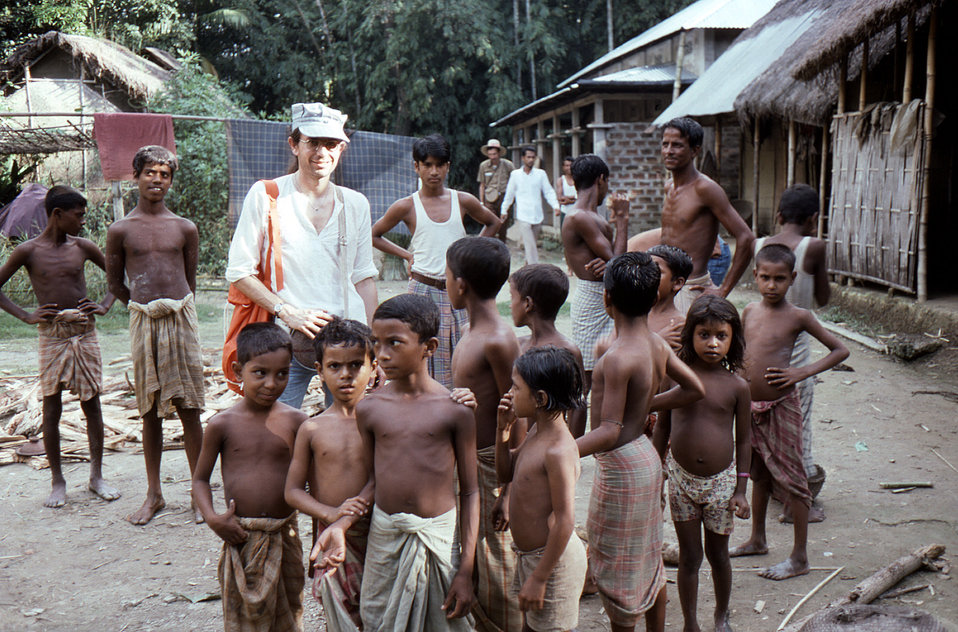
Photographed in the Sylet District of north-eastern Bangladesh, wearing a cap, was Dr. Michael Schwartz, as he was in the process of conducting a national house-to-house search for smallpox. Anyone with a fever and/or rash, was carefully evaluated. In 1975, these searches occurred every six weeks. Another purpose for these searches was to make sure Bangladeshi villagers knew where to report any suspected smallpox cases, as was depicted in PHIL 12312.